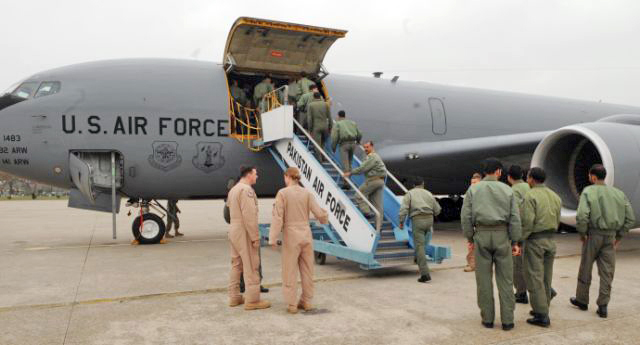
U.S., Pakistan air forces conduct air refueling information exchange

Air Force pilots and aircrews from the 22nd Expeditionary Air Refueling Squadron arrive to conduct an information exchange on air refueling operations with their Pakistan air force hosts March 3, 2010, at Pakistan air force base Chaklala in Pakistan.